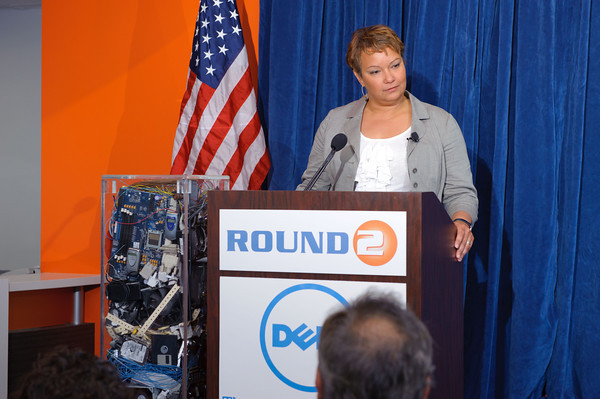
2011-07-20eWasteAustin005-M